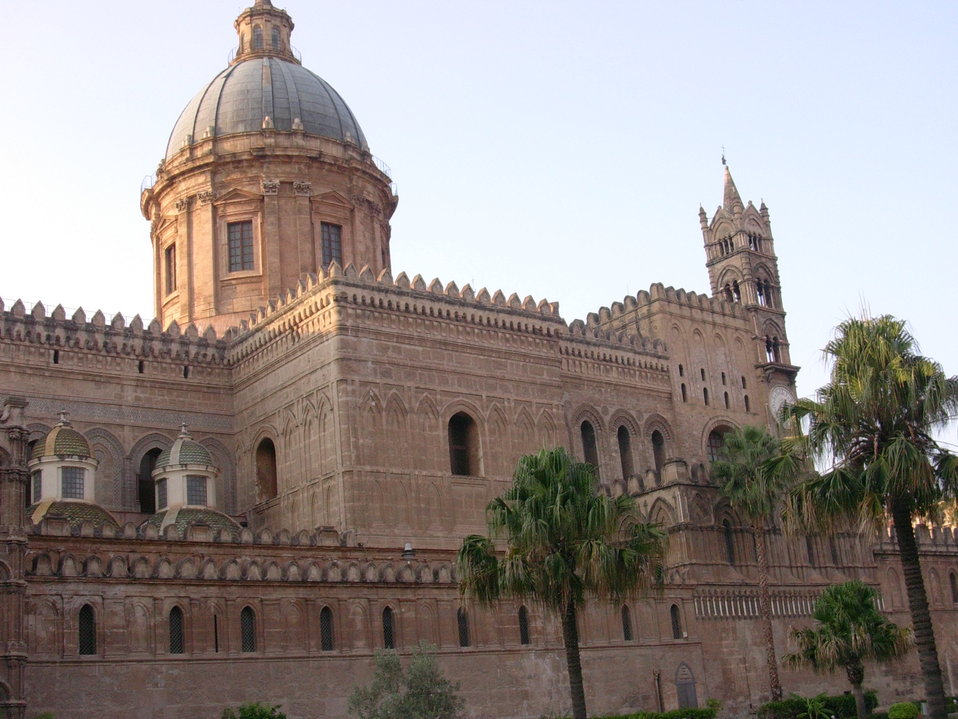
Personal picture by Valentina Funel, September 2005